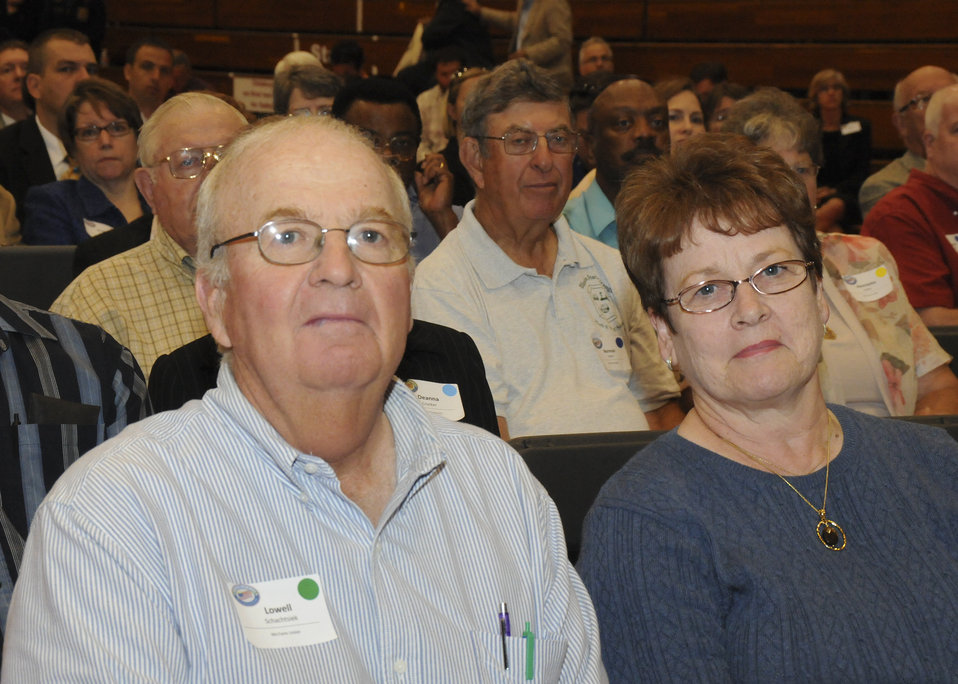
Members of the audience listen to speakers at the National Rural Summit held at Jefferson College in Hillsboro, MO, on Thursday, June 3, 2010. USDA Photo 10di1386-38.